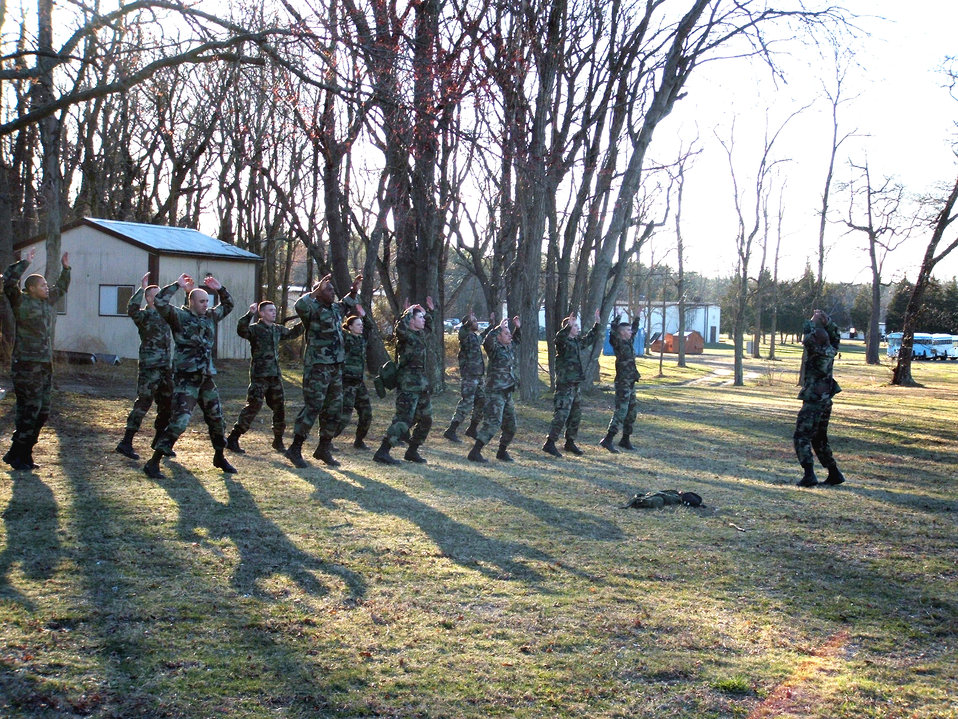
Phoenix Raven

Students in the Air Force Phoenix Raven Class 06-D do jumping jacks before a training session on Monday, March 27, 2006, at Fort Dix, N.J. The students include Air Force security forces and U.S. Navy masters at arms personnel. They receive training in combat first aid, tactical self defense and aircraft security and undergo extensive physical training. The course is taught by the Air Mobility Warfare Center's 421st Combat Training Squadron.